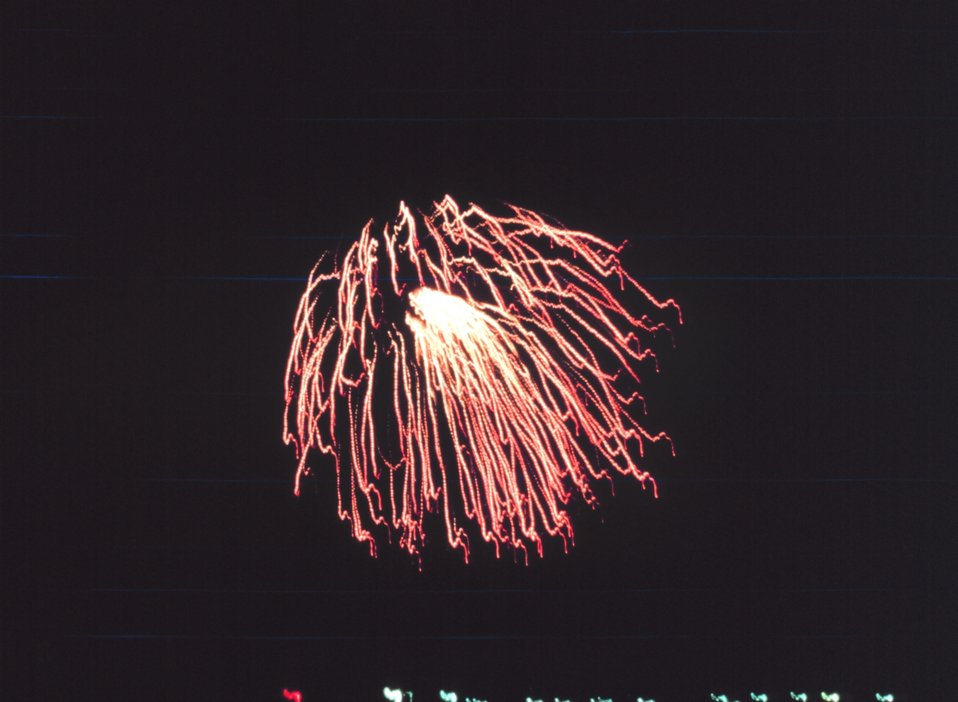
4th of July fireworks at Gloucester.